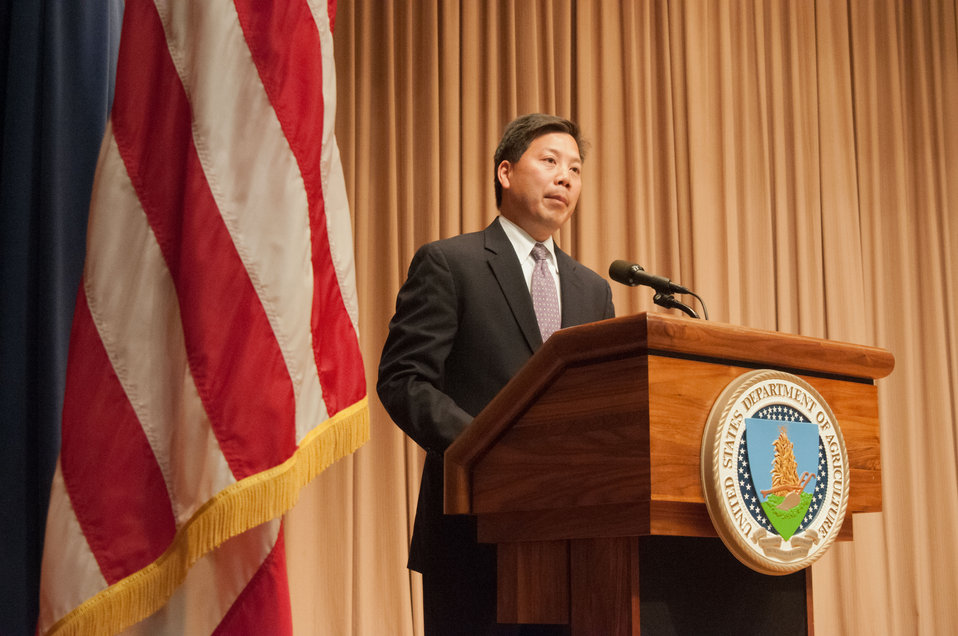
Assistant to the President and Cabinet Secretary The White House Chris Lu was the guest speaker at the 2012 Asian Pacific American Heritage Observance “Striving for Excellence in Leadership, Diversity and Inclusion” at the U.S. Department of Agriculture in Washington, D.C. on Thursday, May 24, 2012. Lu is President Obama’s primary liaison to the Cabinet departments and agencies, helping to coordinate policy and communications strategy and serves as co-chair of the White House Initiative on Asian Americans and Pacific Islanders.